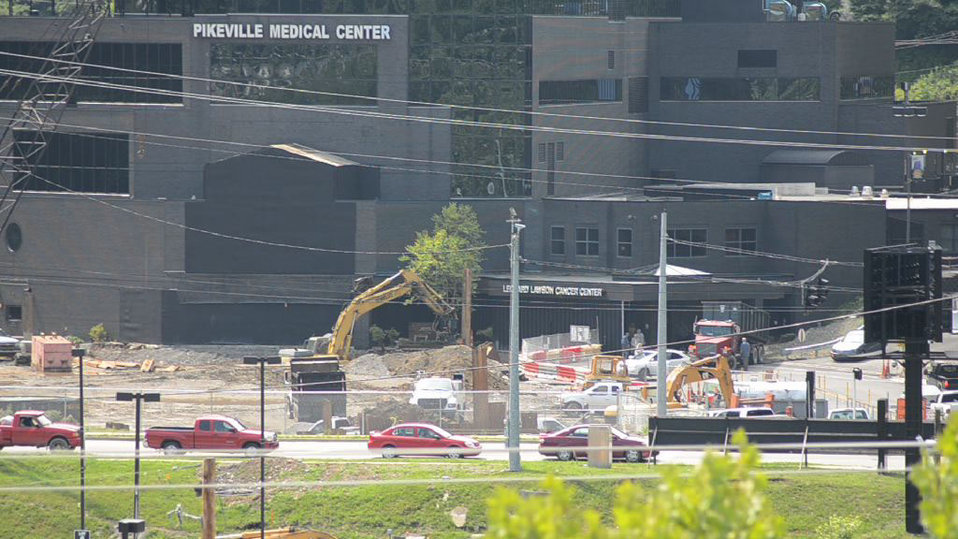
From across the horseshoe shaped town of Pikeville, KY, various buildings, parking lots, temporary walkways, and above ground construction of the Pikeville Medical Center (PMC) expansion project, on Tuesday, July 12, 2011, in Pikeville, KY. After months of infrastructure construction and rain delays, one of Kentucky’s largest American Recovery and Reinvestment Act (ARRA) projects is under way. The $44.6 million Community Facilities Loan will finance construction of a new medical office building and parking garage. The new medical office building will house outpatient surgery, endoscopy, surgical support and provide exam, waiting and office space for 23 primary and specialty care physicians. It also will contain a medical research center to support existing research – in conjunction with Pikeville College – on health disparities, genetic research related to the prevalence of cancer and other areas, including drug and treatment trials. The new parking garage with more than 1,000 spaces will be built adjacent to the new medical building, eliminating the need to shuttle patients back and forth from remote parking areas. The new garage will provide closer and easier proximity to medical and hospital services for all patients.
Wayne Rutherford, County Judge-Executive for Pike County, says funding from ARRA is a boon for his county because it will create jobs.

“This is great for Pike County’s economy. We know we have a great hospital, and with this support, it will be even better,” said Rutherford. “The unemployment rate here is above the state average and this will stimulate jobs. There will be construction, which means lots of jobs on the front end – and even more once it is built.”

Pike County is one of Kentucky’s persistent poverty counties and the current medical facility provides health care services for a rural population of more than 68,000. This project will create 1,430 direct and indirect construction jobs, in addition to 97 long-term jobs. It is scheduled to be completed in December 2012.

“This project is a prime example of the ARRA monies being utilized for much-needed health care facility expansion in an economically-depressed region of Eastern Kentucky and Appalachia,” said Tom Fern, State Director for Rural Development in Kentucky. “This hospital has received national recognition for its quality of care, and this money will allow them to expand and build upon their success and continue providing quality health care services to the region.”

PMC was named National Hospital of the Year by the American Alliance of Healthcare Providers in November 2009. The hospital was among 400 elite health care facilities to apply for this prestigious honor. To earn this recognition, PMC competed against more than 400 hospitals, including the Mayo Clinic, the John Hopkins Hospital, Cedar-Sinai Medical Center, the Cleveland Clinic, Duke University Medical Center and Vanderbilt University.

Pikeville City Manager Donovan Blackburn said the medical center is the largest employer in Pikeville and contributes nearly $2 million to the city through the payment of occupational taxes. He went on to say that Pikeville Medical’s success is also the city’s success because as other cities struggle with dwindling revenues, Pikeville has actually seen growth.

“This is a regional medical center that is very important to the city. Pikeville is a legal, financial and education hub for Eastern Kentucky and a gateway to rural communities in Virginia and West Virginia. There are half a million within a 50-mile radius – so it’s not just local people that depend on this facility,” said Blackburn. “From a regional standpoint it adds volume from a jobs standpoint. Everybody in this county knows someone or has family that works for Pikeville Medical Center.
“People in this area used to have to go out of the area for good jobs and quality medical services, but Pikeville Medical has changed that,” added Blackburn. 'And it has impact on other parts of the city’s economy – hotels, restaurants and retail. It increases the quality of life tenfold.”

The Recovery Act was designed to spend money gradually over time in order to sustain a true recovery – with peak spending to occur early this year. While the experts agree that ARRA is already responsible for creating or saving approximately two million jobs, about 75 percent of recipients that reported on their Recover Act spending indicated their projects are less than half complete, meaning there is even more job impact from those dollars to come.